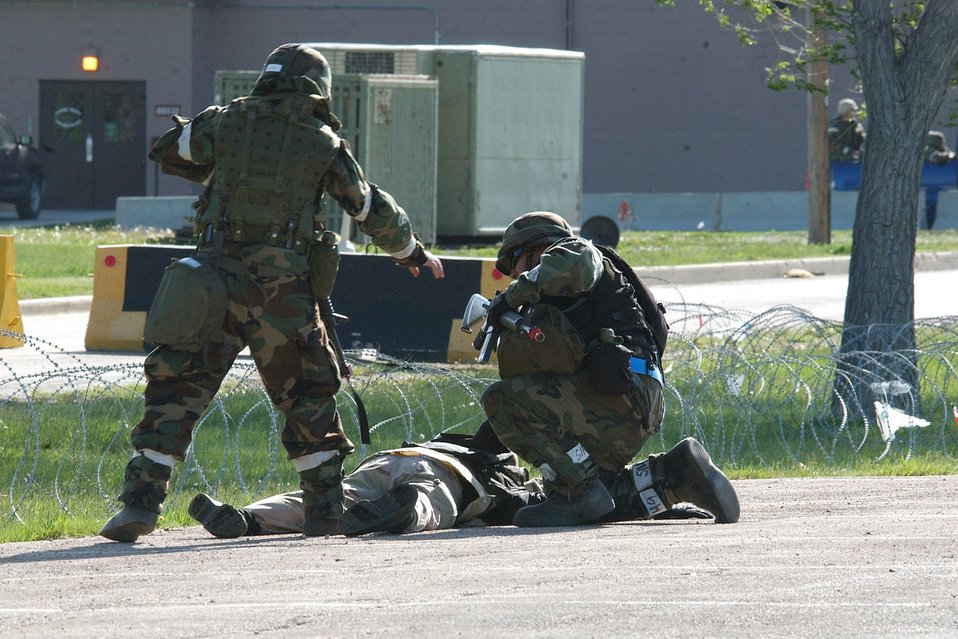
Operational readiness exercise

Airmen from the 28th Bomb Wing simulate apprehension of an armed terrorist during an operational readiness exercise at Ellsworth Air Force Base, S.D., on Wednesday, May 24, 2006.